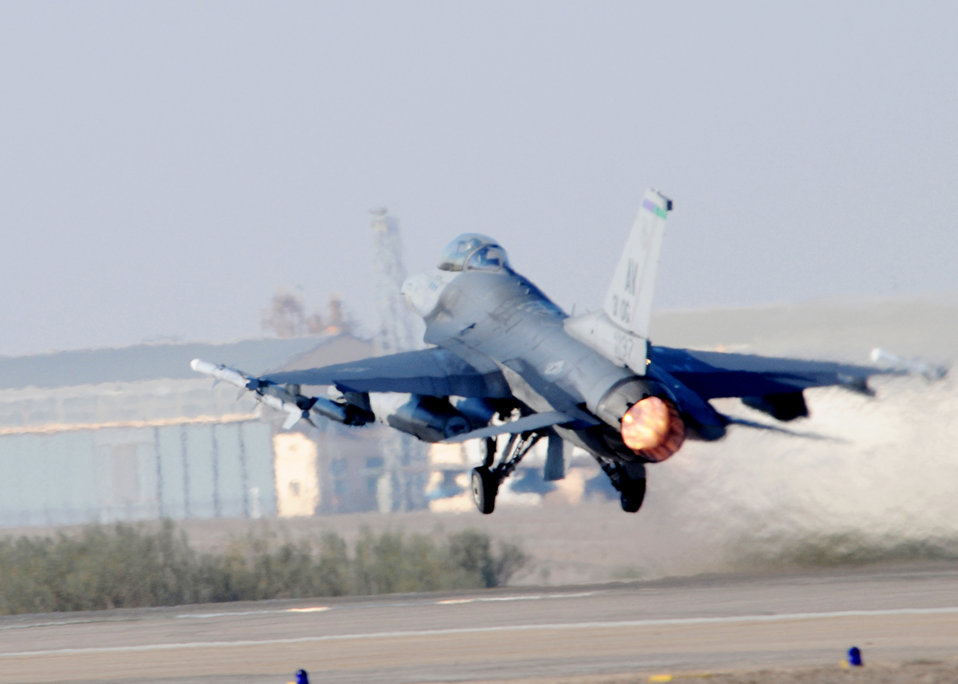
Airmen train in Spain

An F-16 Fighting Falcon from Aviano Air Base, Italy, takes off Feb. 2, 2010, at Zaragoza Air Base, Spain. During their deployment to Zaragoza AB, 555th Fighter Squadron pilots flew 239 sorties in nine flying days.